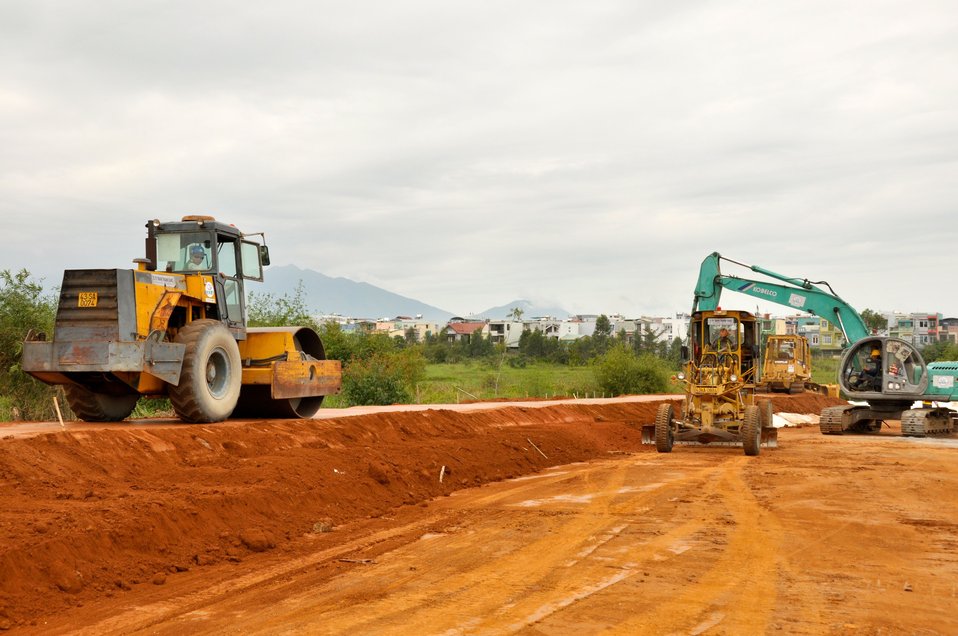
Site Preparation for Environmental Remediation of Dioxin Contamination at Danang Airport

Danang Airport, January 22, 2013